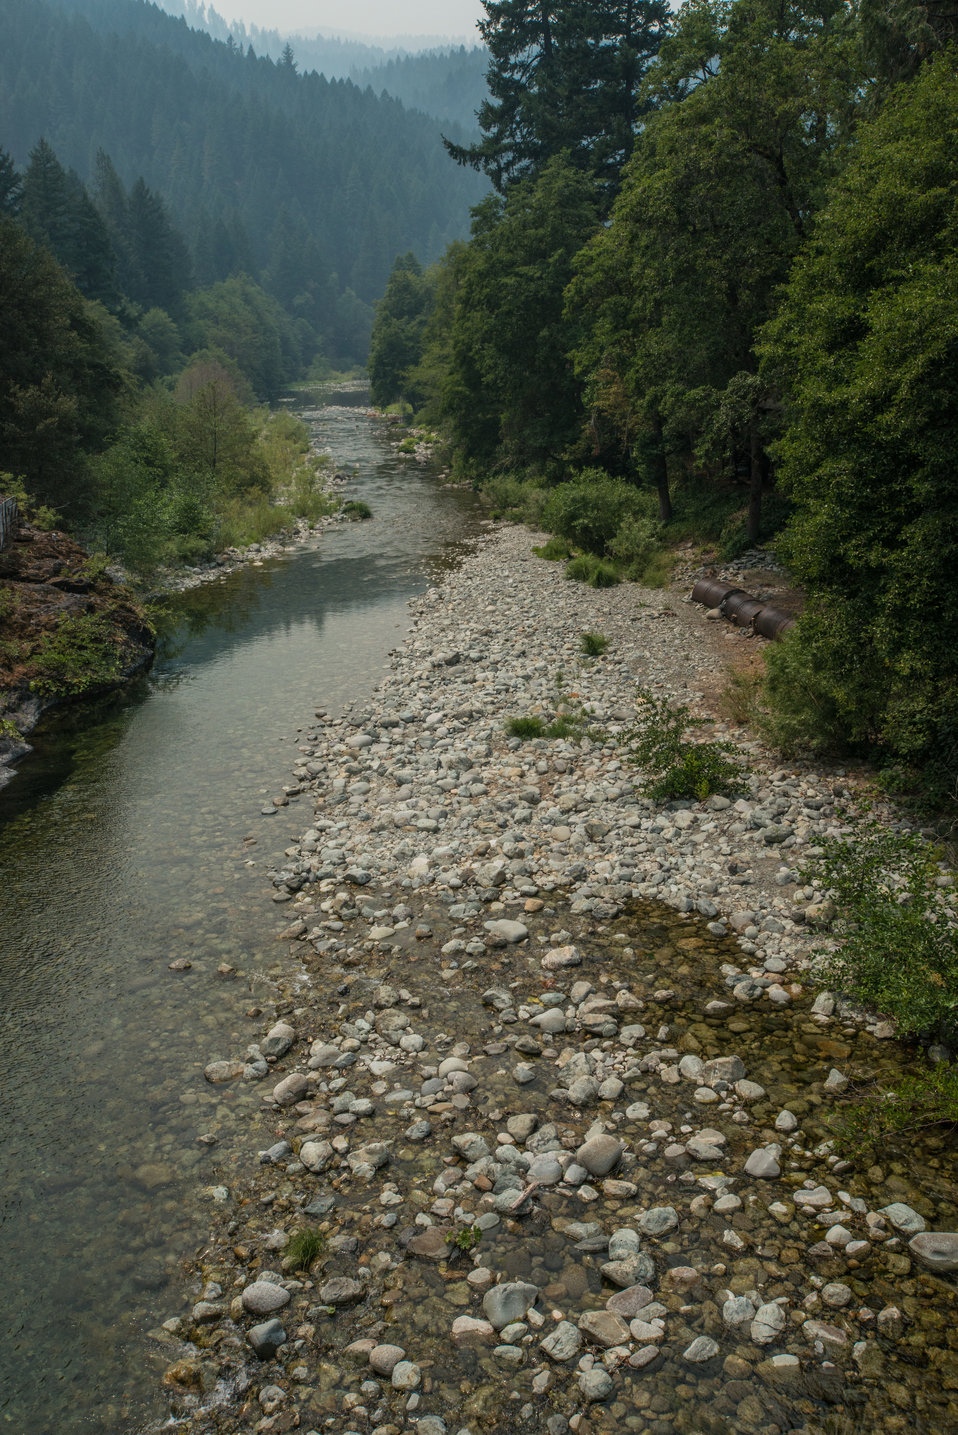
The clear waters of the North Fork Salmon River runs along the south side of Sawyers Bar (right), in Klamath National Forest, Calif., where the Salmon River Complex Wildlands Fire burns miles away to the northwest and west of Etna and Yreka, CA, on Tuesday, Aug. 6, 2013.